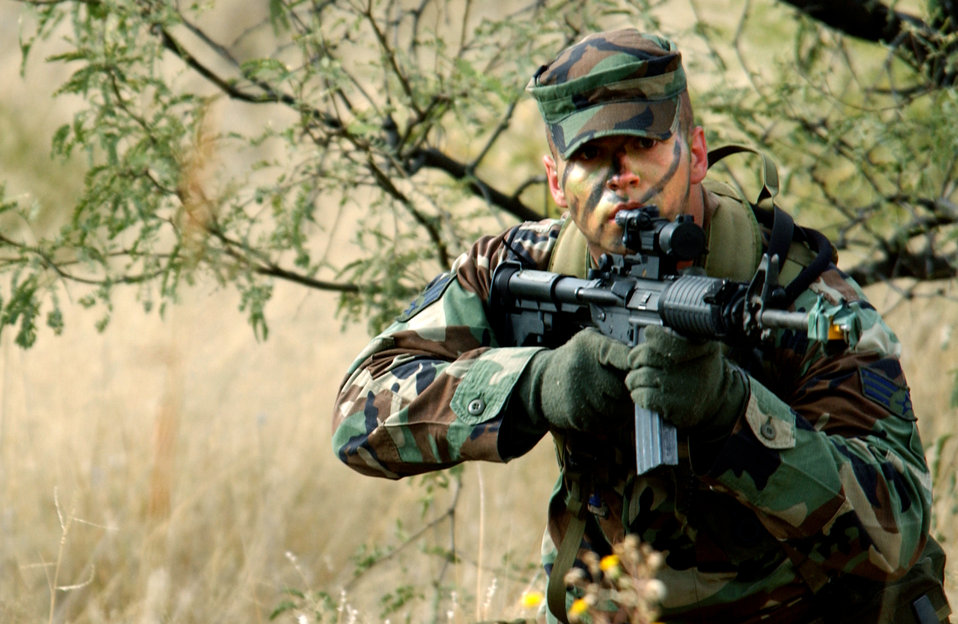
Covering the

FORT HUACHUCA, Ariz. -- Senior Airman Chris Clawson provides rear security during a tactics training exercise Oct. 13. Members of the U.S. Air Forces in Europe Defender Challenge team are spending three weeks here in preparation for the 2004 Defender Challenge competition. Defender Challenge held at Lackland Air Force Base, Texas, is a security forces competition pitting competitors from major commands against one another over a series of events. Airman Clawson is assigned to the 39th Security Forces Squadron, Incirlik Air Base, Turkey.